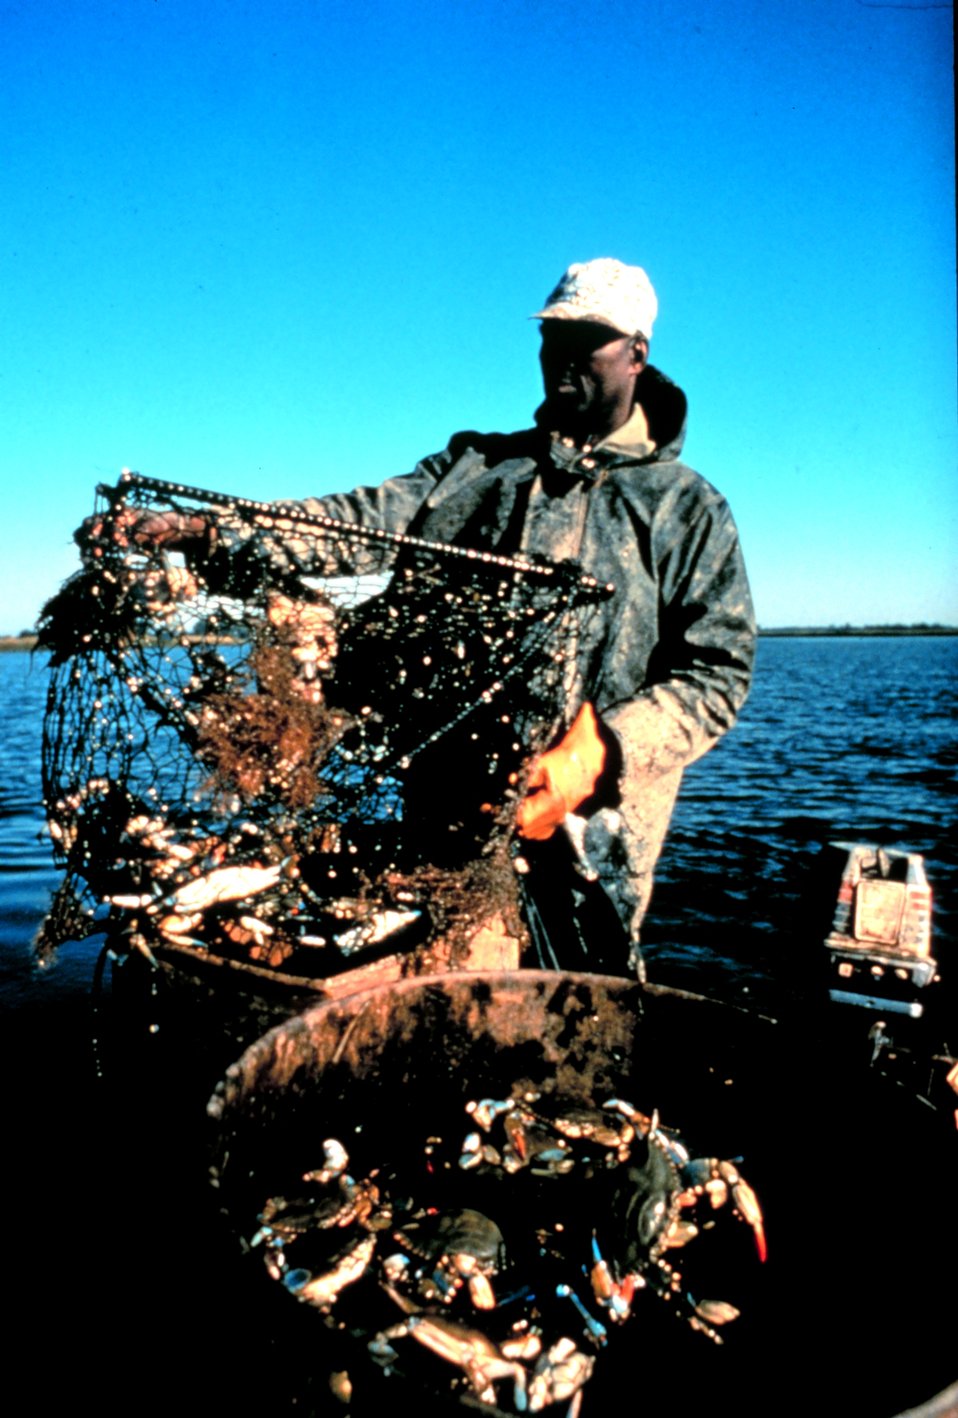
ACE Basin National Estuarine Research Reserve. Traditional use of estuary areas includes crabbing.